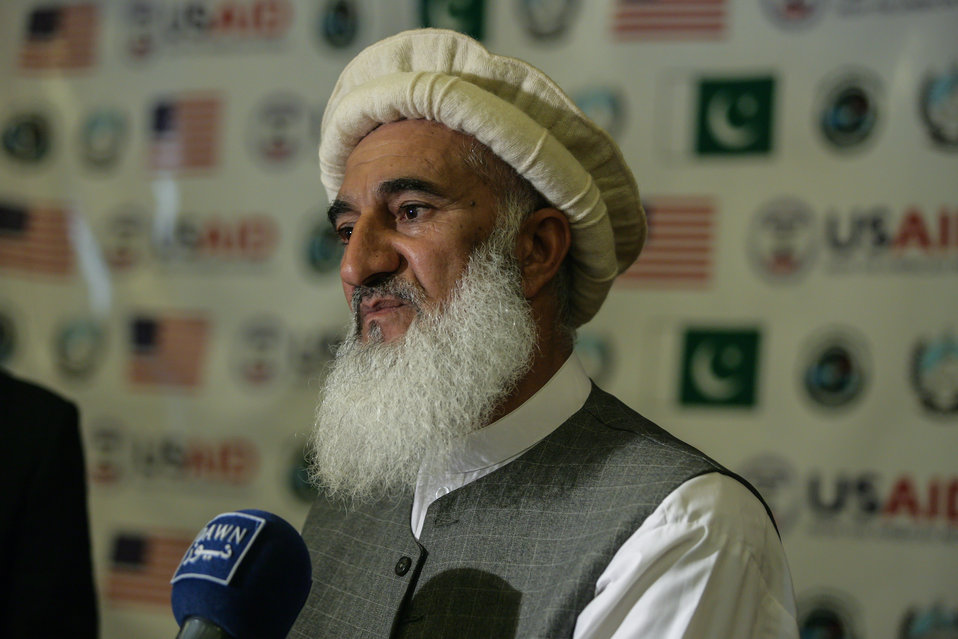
Graduation event of USAID Firms Project's Malakand Small and Medium Enterprises (SME) Recovery Assistance Program

Mr. Meraj-ud-din, President Swat Hotel Association, speaking to the media after the event.